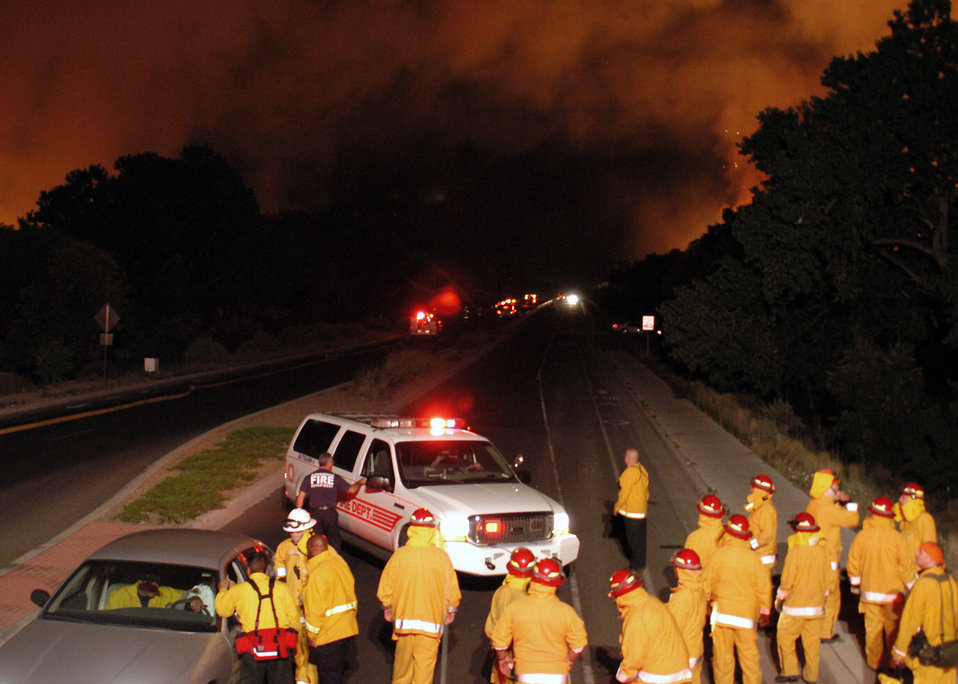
Ominous sky

ALBUQUERQUE, N.M. -- Firefighters from Kirtland Air Force Base assess the situation June 25 after helping extinguish the second Albuquerque Bosque fire here in less than 24 hours. Base officials sent more than 30 firefighters and five vehicles to help as part of a mutual-aid agreement. In two days, nearly 1,500 acres burned and approximately 1,000 people were evacuated from their homes and businesses.